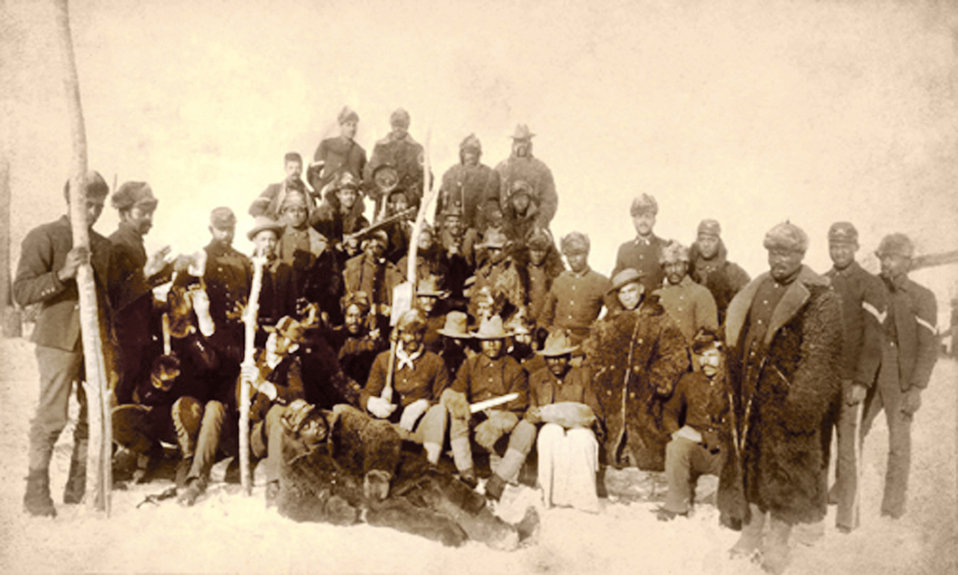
Buffalo Soldiers

In order to settle problems in 19th century New Mexico, the U.S. Army called upon a group of recently freed black men to form the 9th and 10th Cavalries. They subsequently became known as